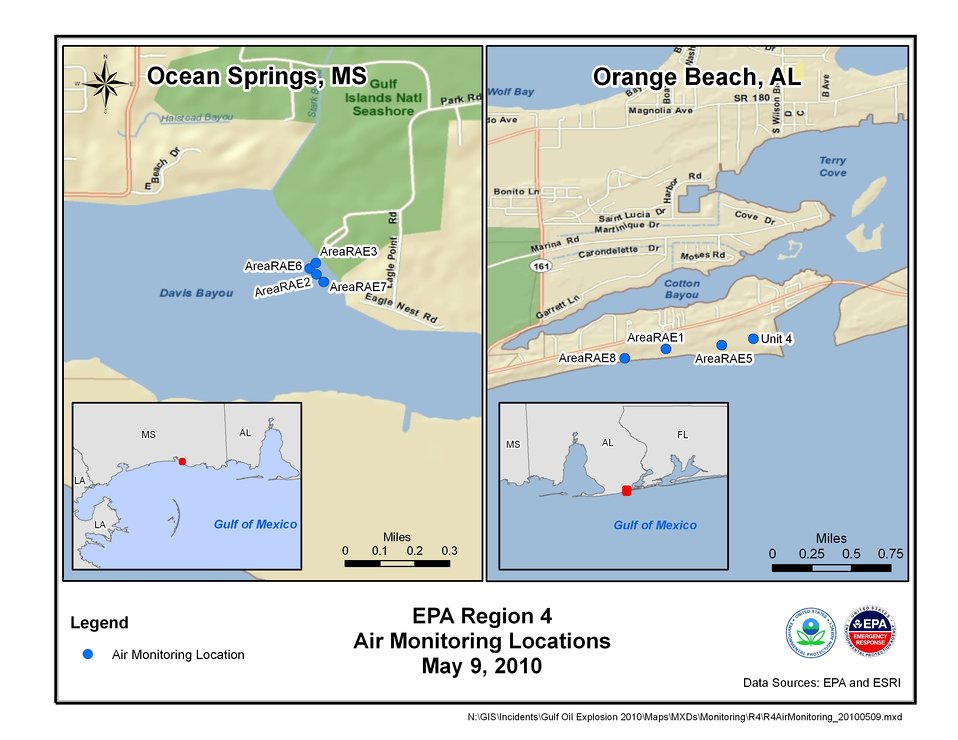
EPA Air Monitoring Locations May 9, 2010